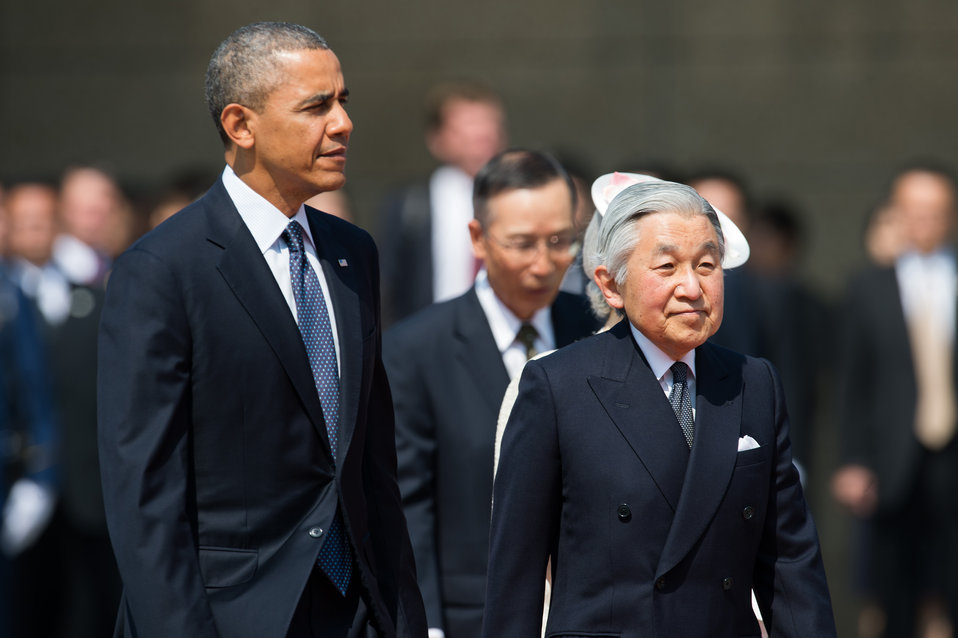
President Obama and Emperor of Japan at the Welcome Ceremony in Japan

U.S. President Barack Obama participates in the welcome ceremony with His Majesty the Emperor of Japan at the Imperial Palace during his state visit to Tokyo, Japan, on April 24, 2014.